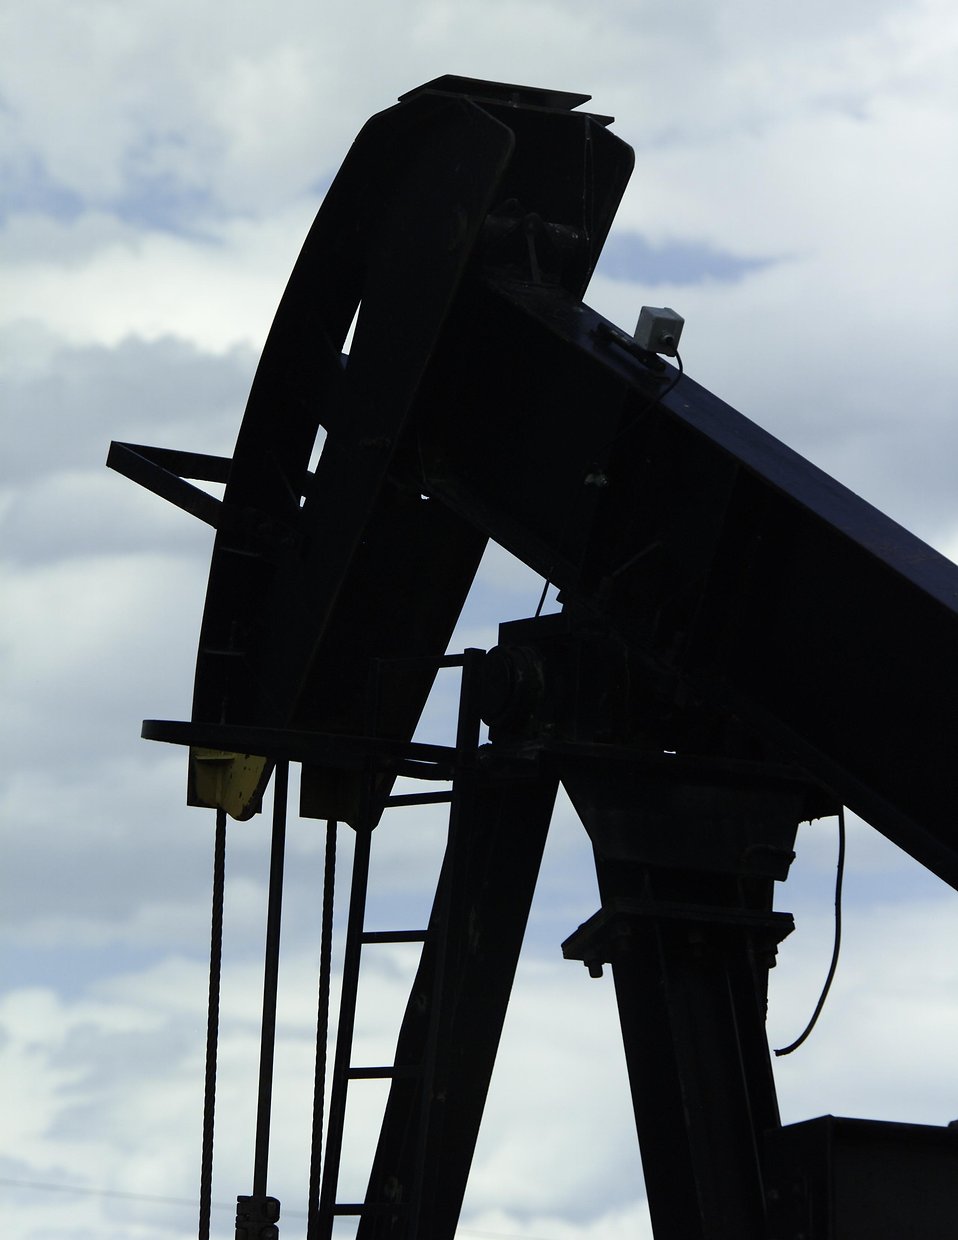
Pump jack at Naval Petroleum Reserve No.3 (NPR) near Casper, Wyoming.

The Rocky Mountain Oilfield Testing Center (RMOTC) is a Department of Energy field test site for emerging and developing technologies to address critical energy issues. The field test stie, located on Naval Petroleum Reserve No.3 (NPR-3), is a 10,000-acre site. There are approximately 700 well bores with 600 producing wells ranging in depth from 500 to 5,000 feet.